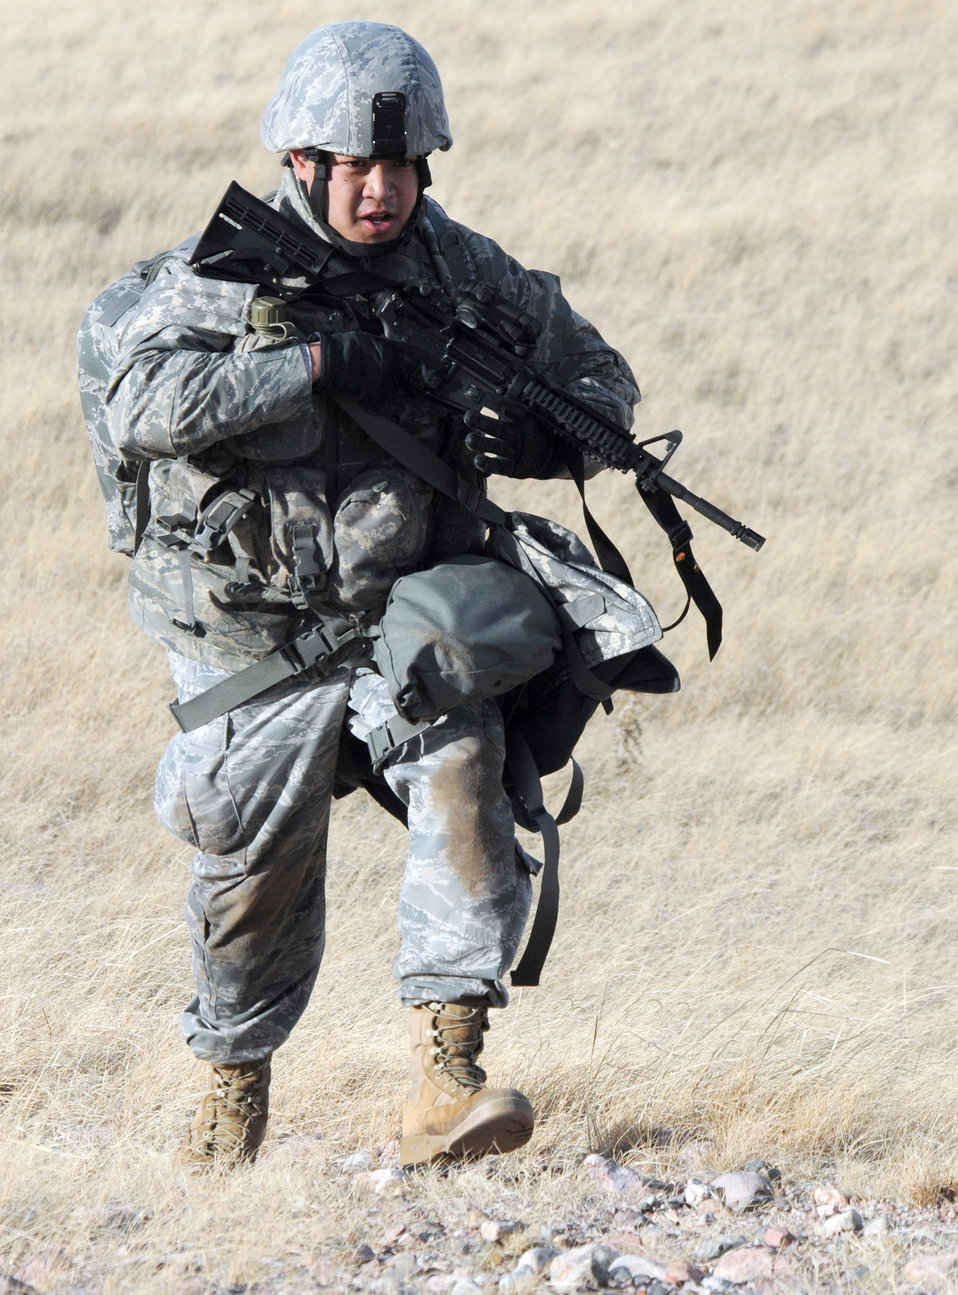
Security forces exercise

Senior Airman Christian Cabague hurries along a trail while on patrol with other security forces members during an exercise Jan. 13, 2011, at F.E. Warren Air Force Base, Wyo. Airman Cabague is assigned to the 90th Security Force Squadron.